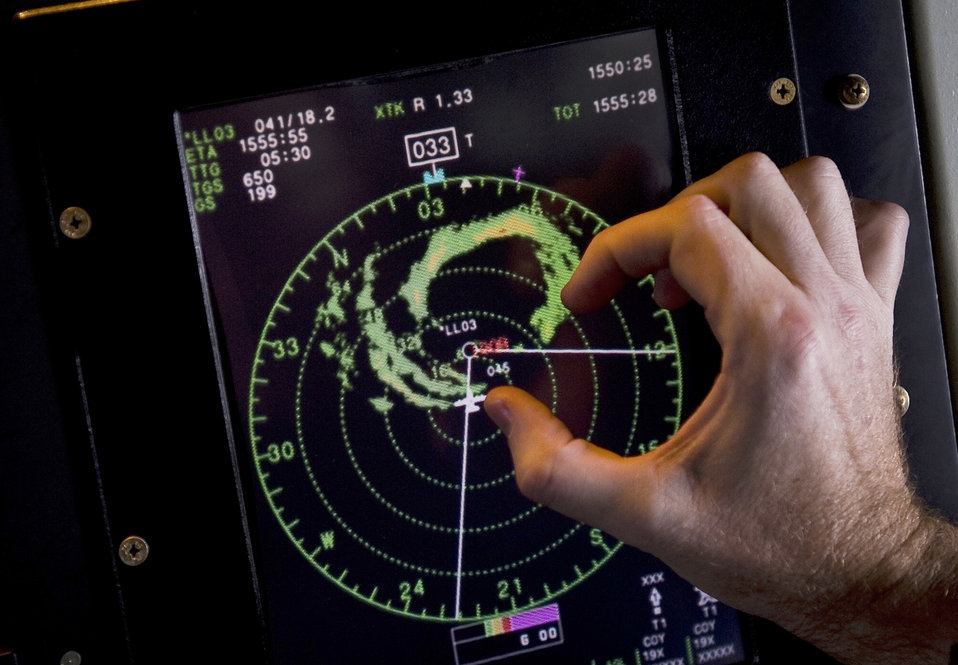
Hurricane hunters on Igor

Lt. Col. John Gallagher roughly calculates the size of Hurricane Igor's eyewall onboard a WC-130J Hercules during a mission Sept. 16, 2010, over the Atlantic Ocean. Colonel Gallagher is a flight meteorologist with the Air Force Reserve Command's 53rd Weather Reconnaissance Squadron at Keesler Air Force Base. Miss.